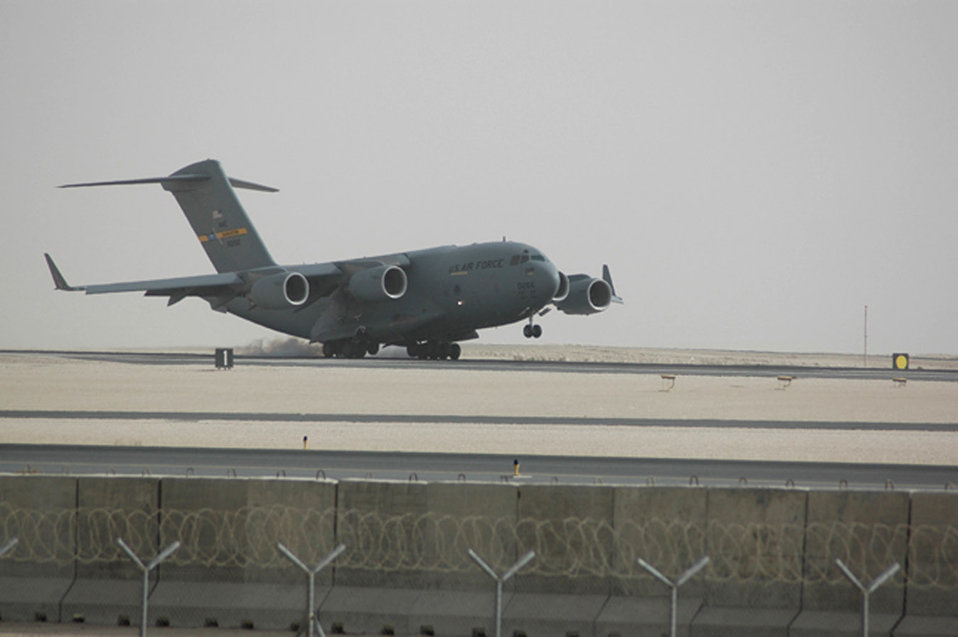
C-17s deliver troops, cargo

A C-17 Globemaster III touches down at a forward deployed location upon returning from a mission. The C-17 performs tactical airlift and airdrop missions, transports passengers, delivers troop resupply and all types of cargo throughout Southwest Asia in support of Operations Enduring and Iraqi Freedom.